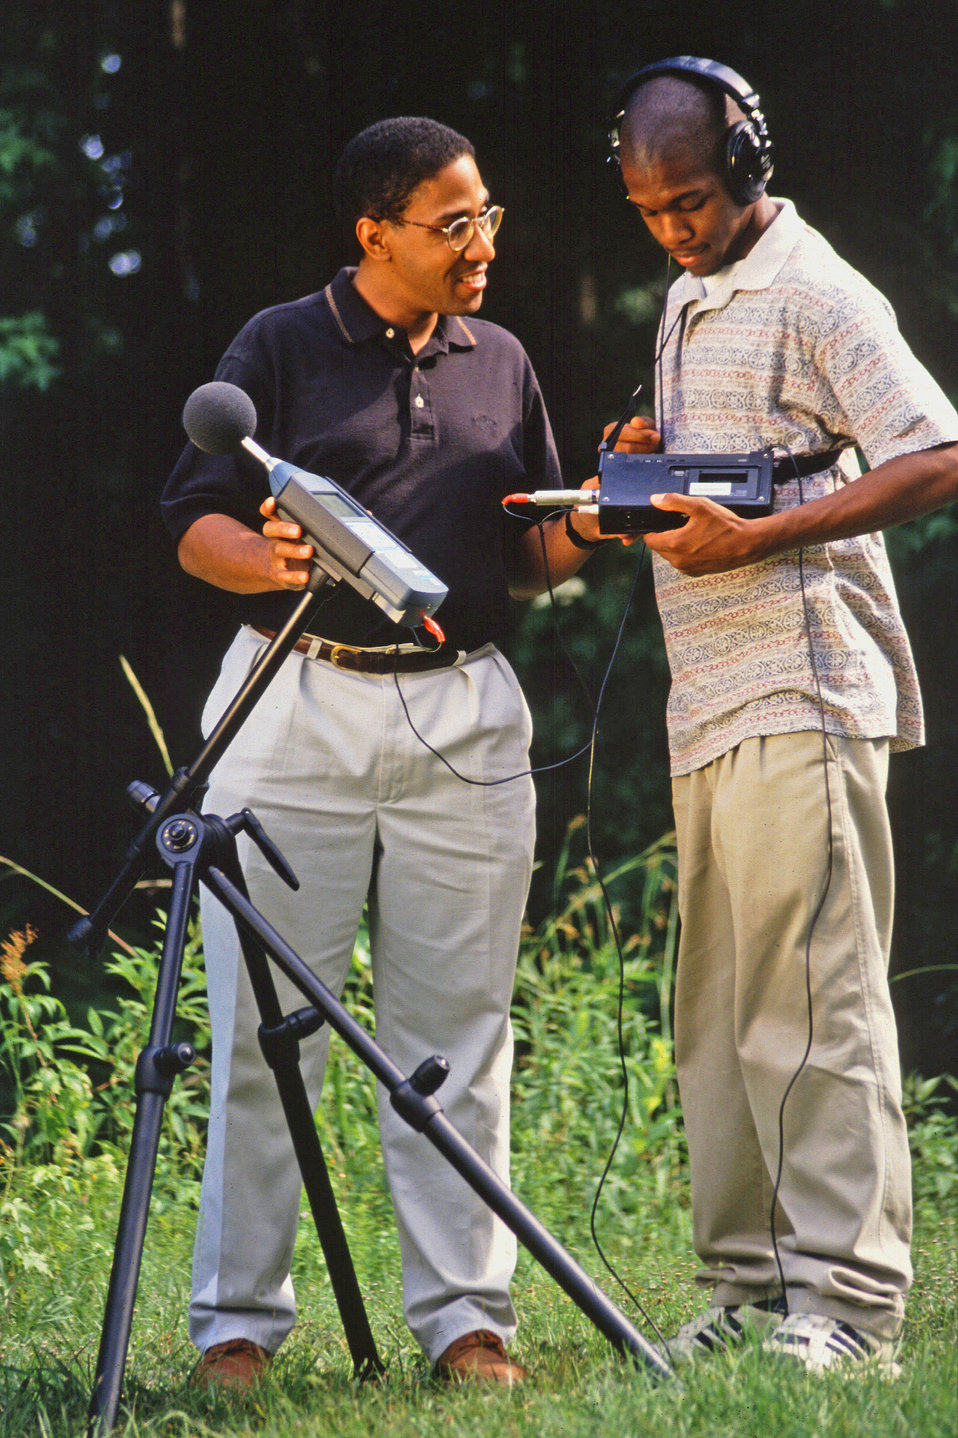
U.S. Department of Agriculture (USDA) Agricultural Research Service (ARS) engineer Everett Foreman shows and Florida Agricultural and Mechanical (A&M) University student Cornelius Dunmore how to use a portable sound level meter.